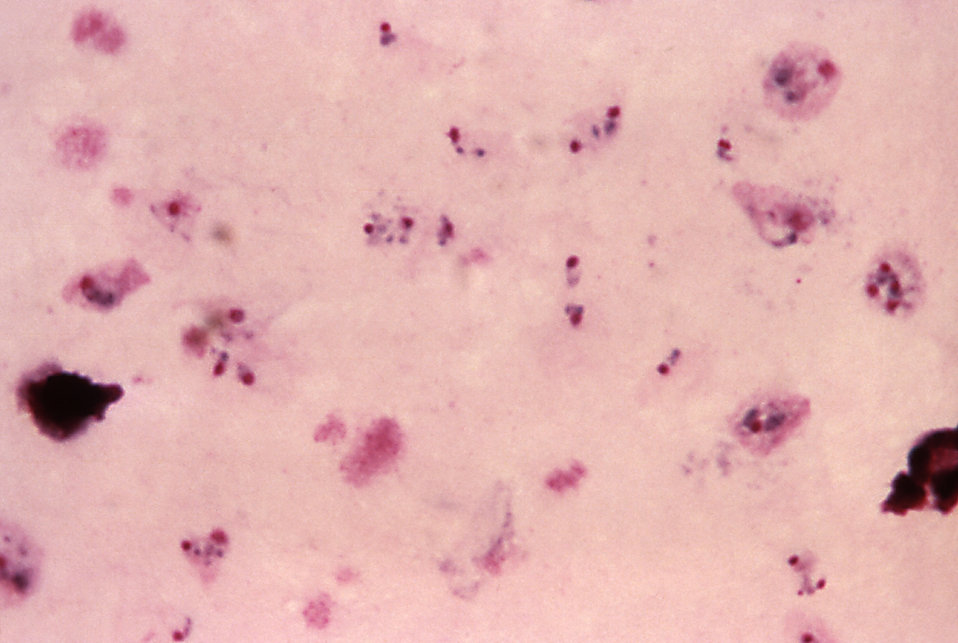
This thick film micrograph depicts a number of P. vivax rings, and a young trophozoite, using Giemsa stain; Mag. 1125X.